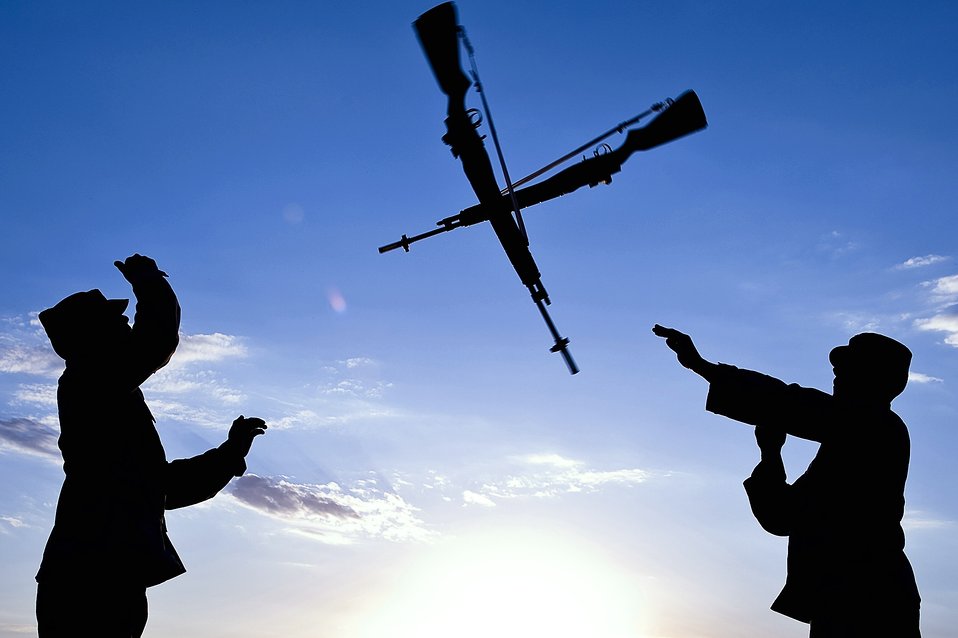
High-flying rifles

Staff Sgt. Ruben TrejoSanchez (left) and 1st Lt. Erik Ruiz practice an over-the-head rifle toss Oct. 3 at Ellsworth Air Force Base, S.D. They are members of the Ellsworth AFB Honor Guard Drill Team.